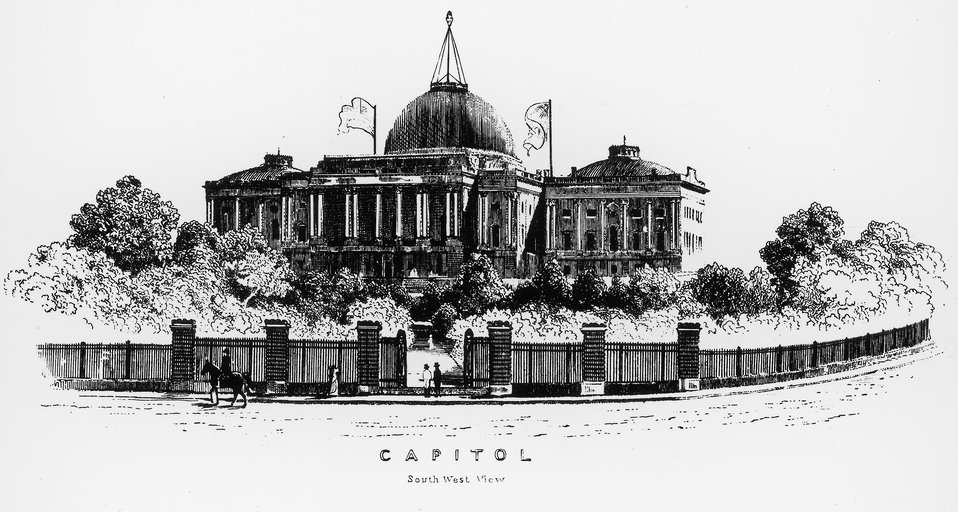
Crutchett’s Lantern 1847

One remarkable feature of the Dome in 1847 was the sight of Crutchett’s Lantern. Rising 92 feet on a mast over the Dome, the 20 feet by 6 feet glass and gilded iron lantern included reflectors that threw light into the Rotunda at night and could be seen miles away. James Crutchett built the light at his own expense (an advertisement for his gas business). Each night a workman had to climb an eight-inch wide ladder to the top and light it. After safety and cost concerns for operating the light grew, work began to remove it after less than a year in place.